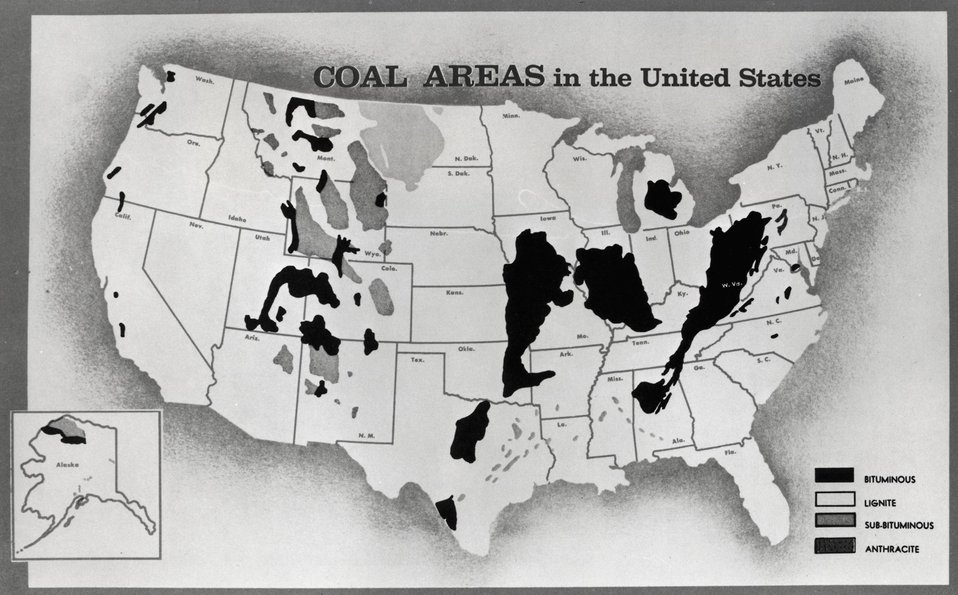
Miscellaneous -- Map of Coal Areas in the United States